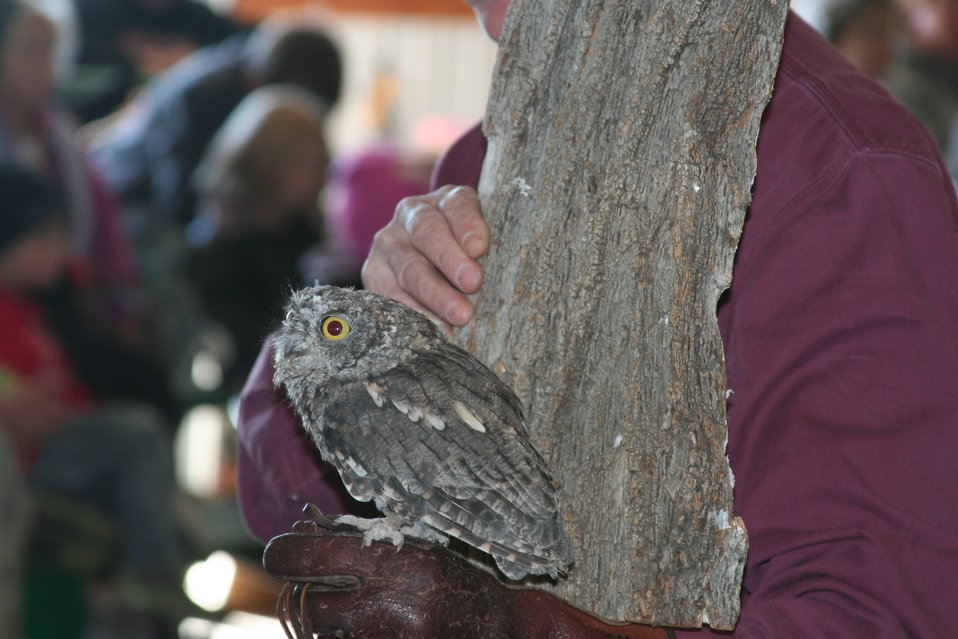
Prairie Fest 2012

Black Hills Raptor Center staff showing off one of their many rescues, a Western Screech Owl.